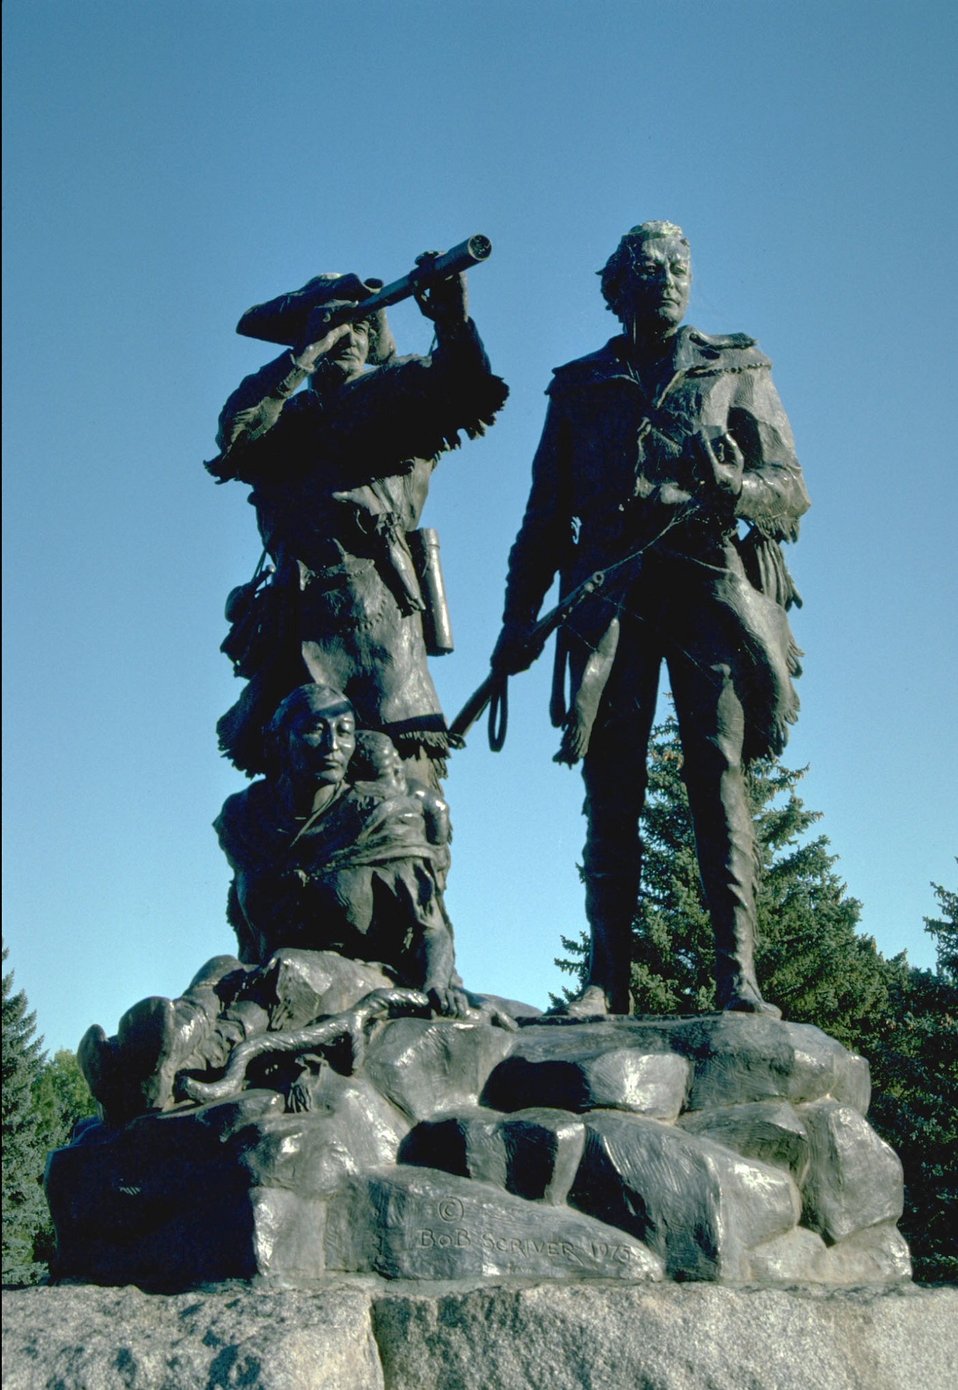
Lewis and Clark statue